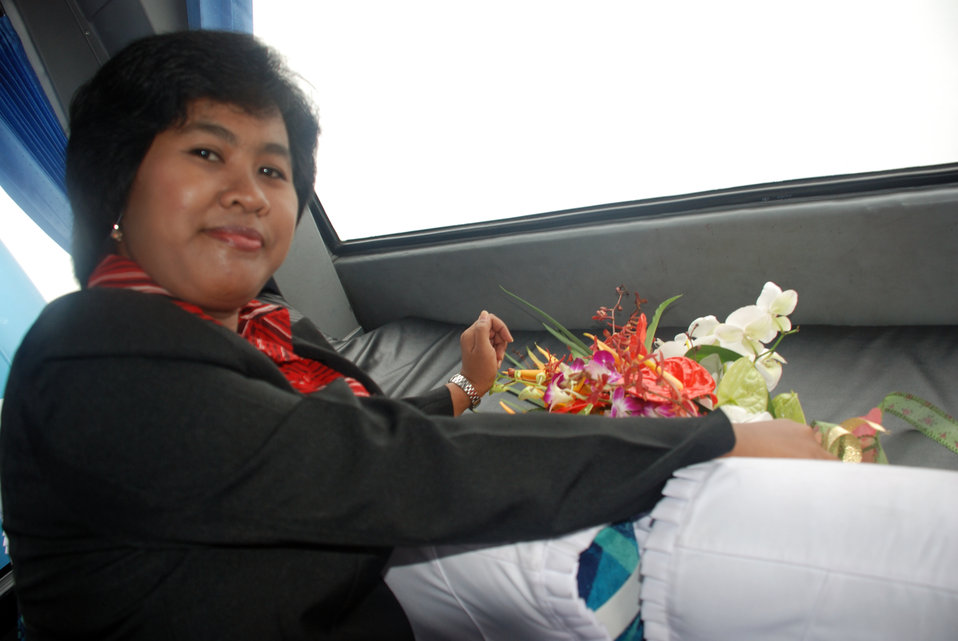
Behind the Scenes: Preparing for Secretary Clinton's Indonesia Visit

Irmina 'Reni' Reniarti puts the flowers for U.S. Secretary of State Hillary Rodham Clinton on the Menteng Elementary School No. 1 student bus in Jarkarta, Indonesia during her visit February 18, 2009.